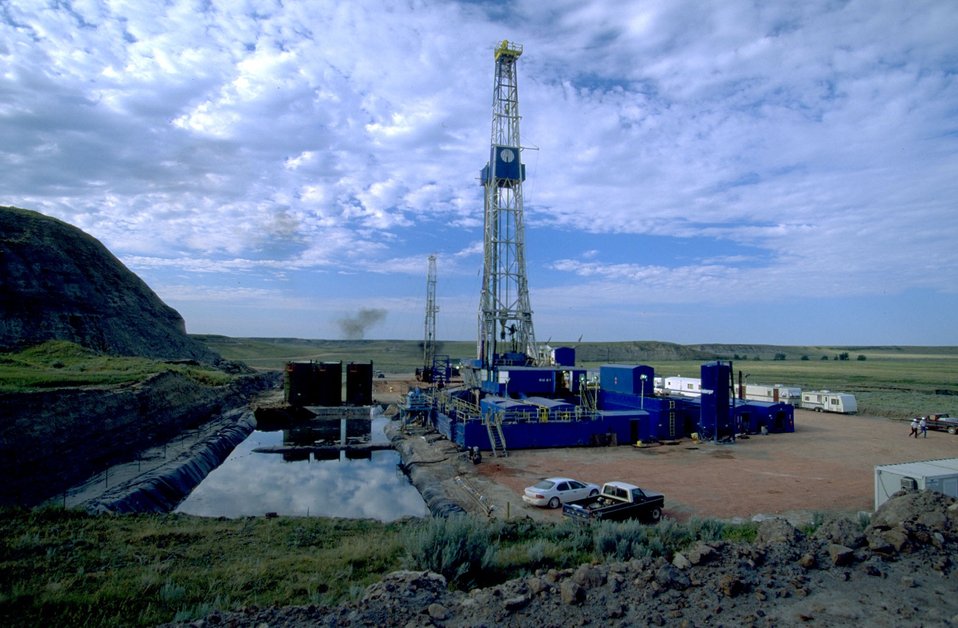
Oil drilling rig (foreground), lined reserve pit to the left of drilling rig, workover rig (smaller, in background)